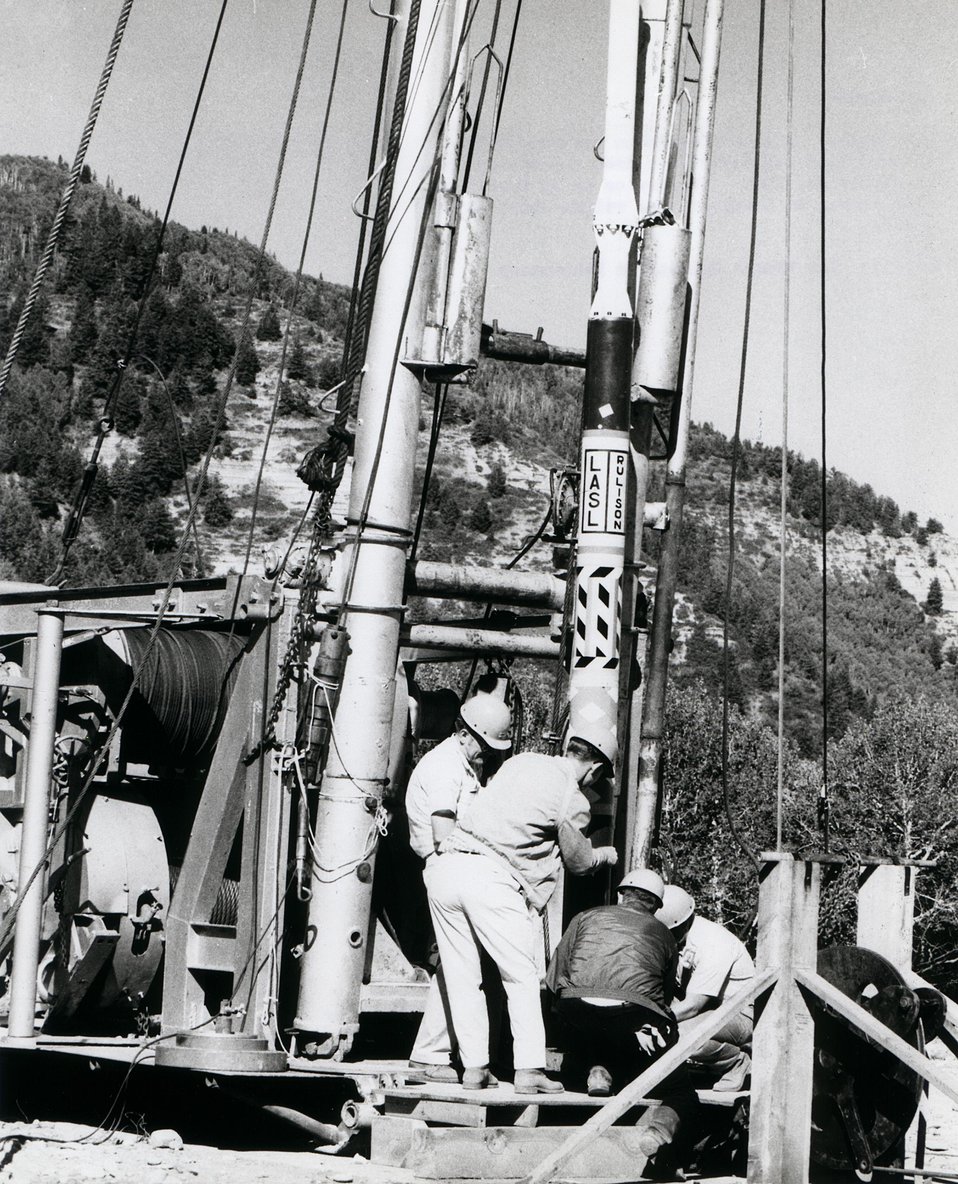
The Project Rulison 40-kiloton nuclear device is lowered into its 8,442-foot deep emplacement hole on August 14, 1969. Circa 1969.